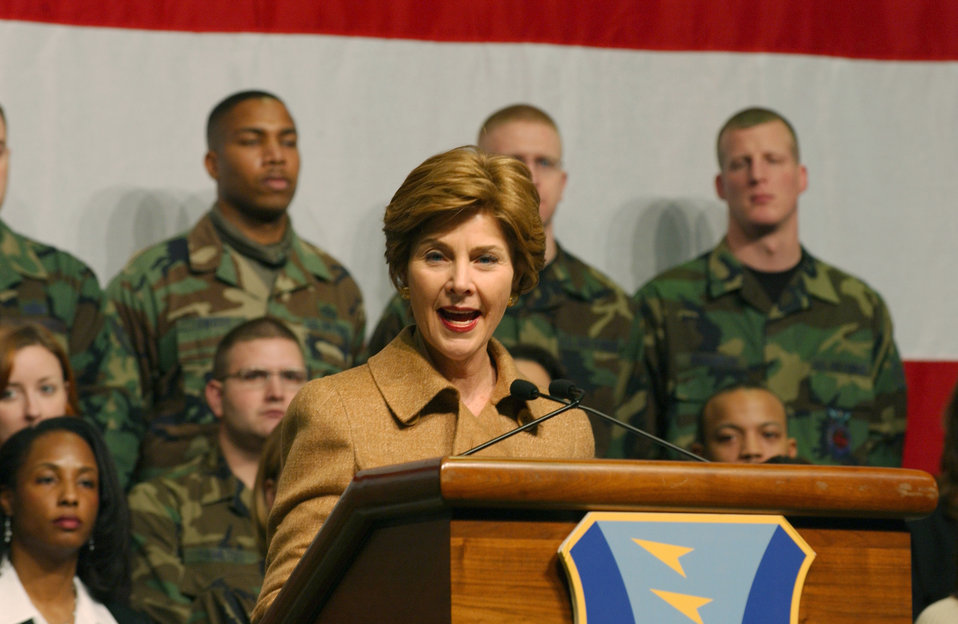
First lady praises troops, families in Germany

RAMSTEIN AIR BASE, Germany -- First lady Laura Bush thanked servicemembers and their families Feb. 22 for their contributions to the U.S. and world security.